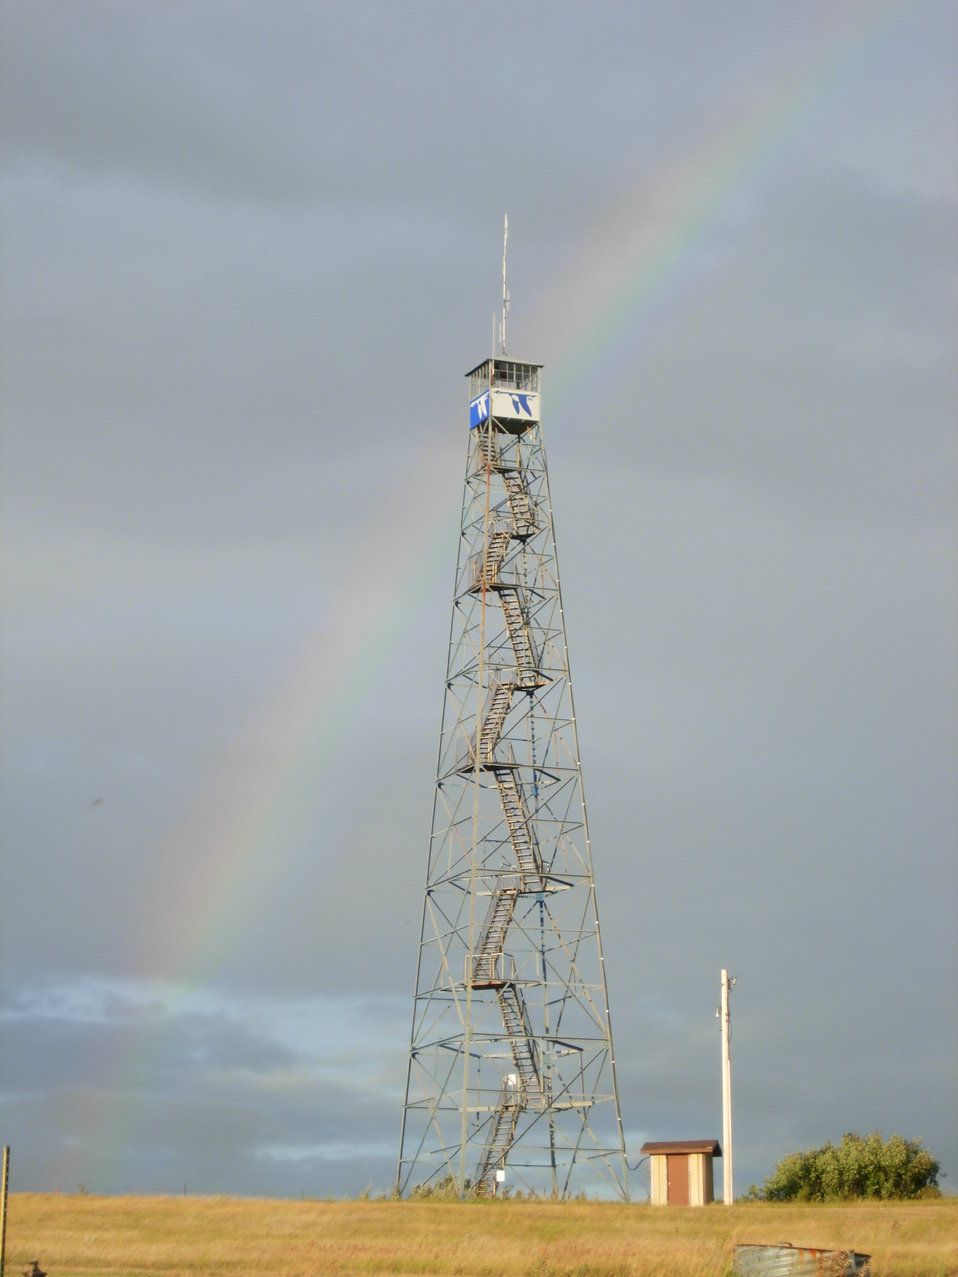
Fire Tower and Rainbow

Fire tower at Upper Souris National Wildlife Refuge built by the Civilian Conservation Corps.